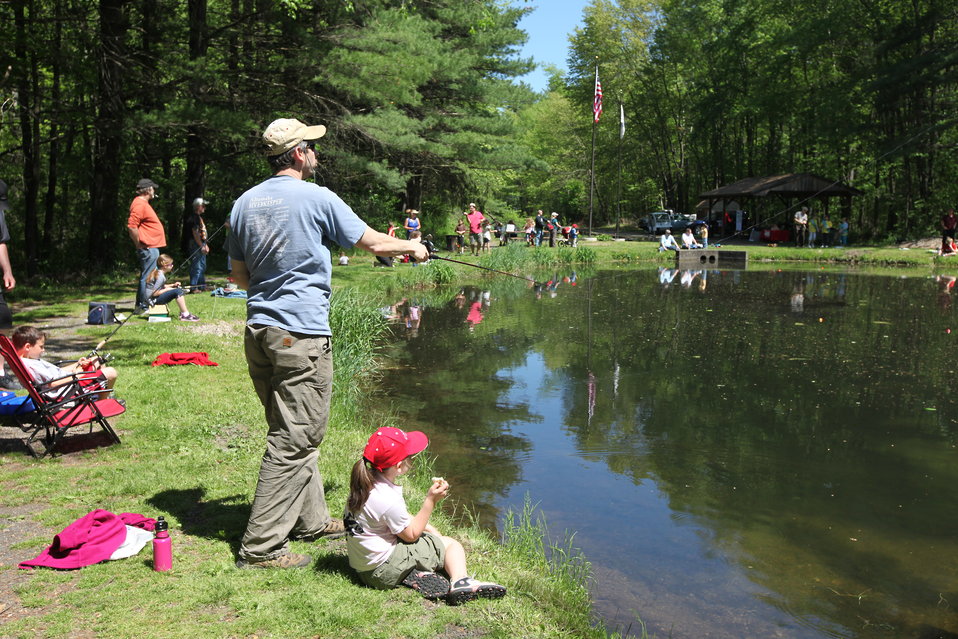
Youth Fishing Derby 2012

Megan Nagel/USFWS